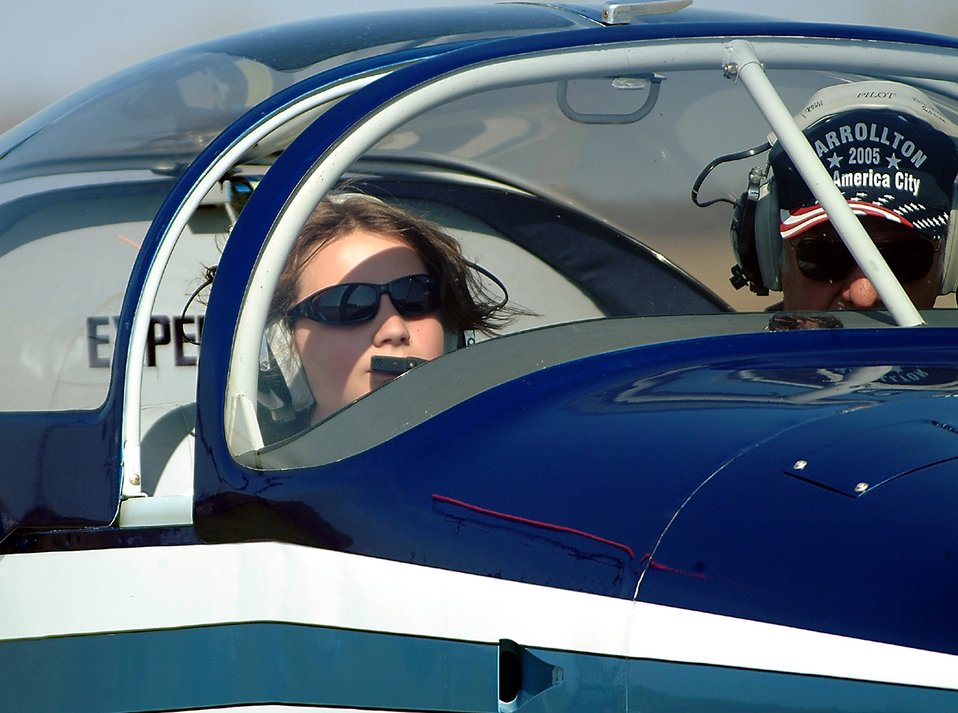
Wright Flight program takes youths to new heights

As a reward for successful completion of the 442nd Fighter Wing-sponsored Wright Flight mentoring program, some students took to the sky for a free flight over central Missouri in aircraft provided by area private pilots who converged on the Carrollton, Mo., airport for the Wright Flight fly day April 21. The 442nd FW is an Air Force Reserve Command A-10 Thunderbolt II fighter unit based at Whiteman Air Force Base, Mo.